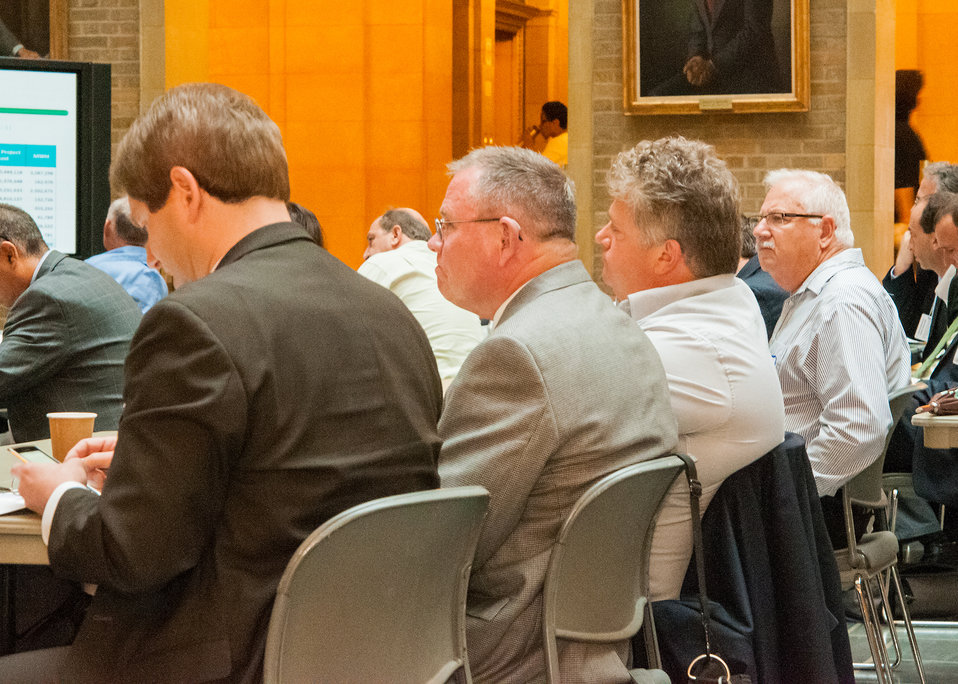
Participants at the U.S.-Israel Bio-Challenge Symposium at the U.S. Department of Agriculture (USDA) in Washington, D.C. on Thursday, Apr. 18, 2013 listen to members of an Israeli delegation, Department of Energy (DOE), Department of Defense (DOD) and representatives of the advanced biofuel industry and Congressional staffers describe the public and private enterprise efforts in to the research and economic benefits of biofuels.